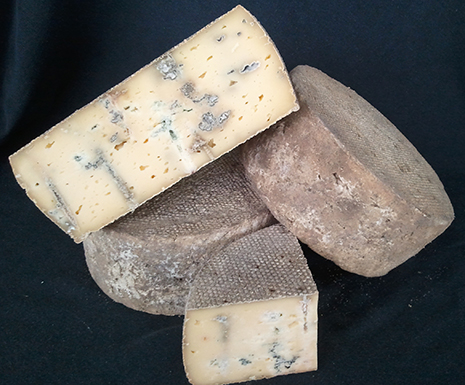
RECALLED – Heavenly Blue cheese

November 26, 2013 – Product Recall – Flat Creek Farm & Dairy Recalls Heavenly Blue Because of Possible Health Risk.